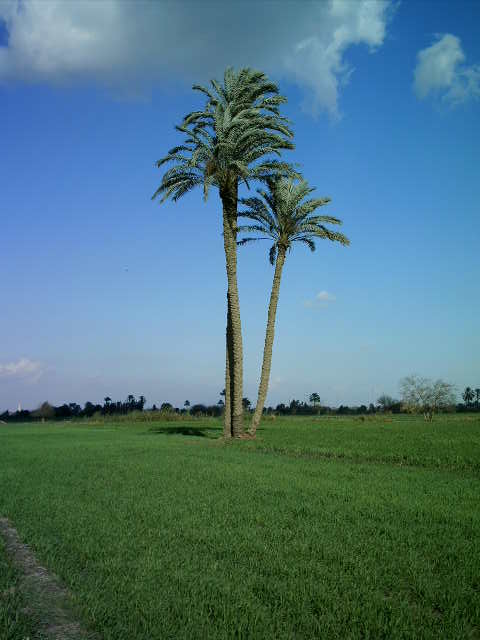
Date palms (Phoenix dactylifera) in Egypt.